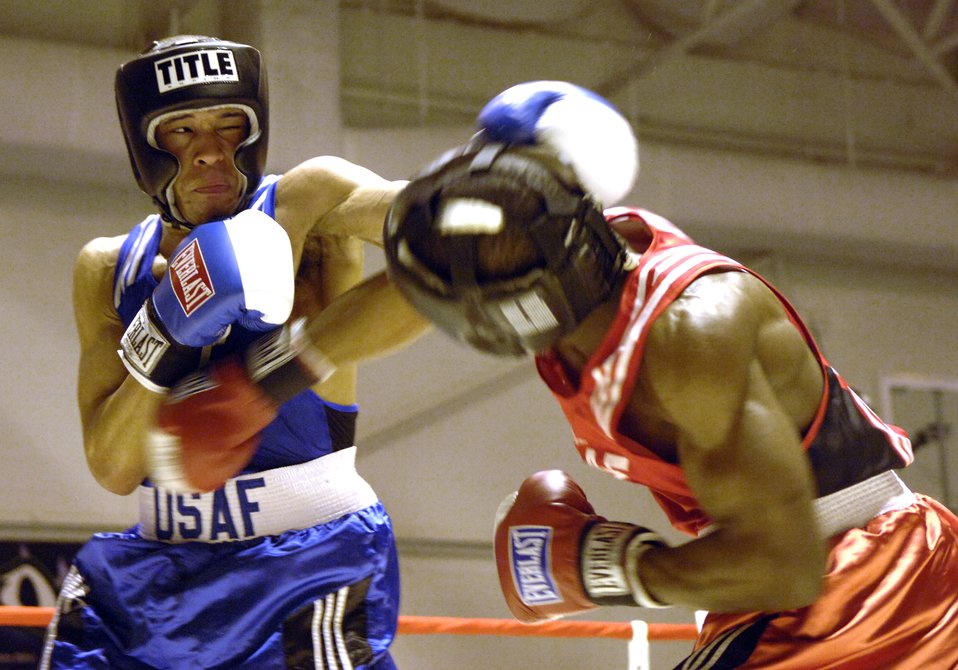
Boxing for the team

SAN ANTONIO -- Andre Penn connects with a left hook while Gary Griffin connects with a body shot during a match, Jan. 20. Penn is from Ellsworth Air Force Base, S.D., and Griffin is from Stewart Air National Guard Base, N.Y. Both will represent the Air Force at the Armed Forces Boxing Tournament, Feb. 6 - 11.